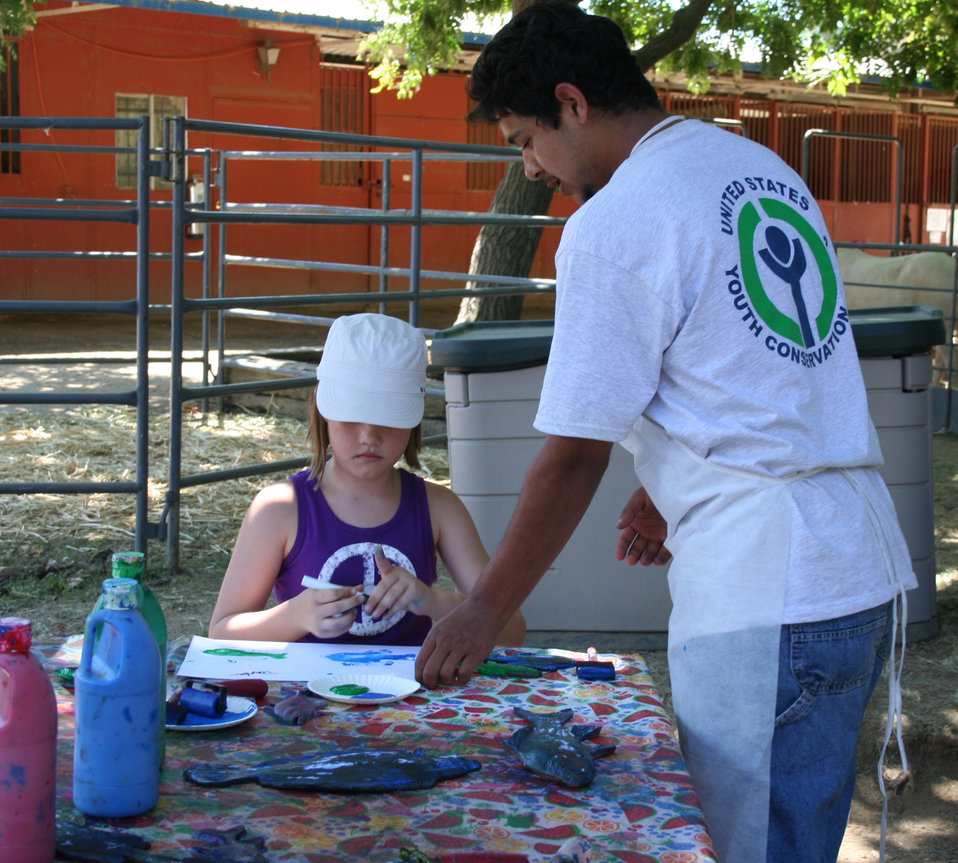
YCC crew member at the California State Fair booth

For the first time DOI agencies [US Fish and Wildlife Service, Bureau of Reclamation and Bureau of Land Management] joined together to host an America's Great Outdoors Booth at the California State Fair in Sacramento, Calif., July 14 - 31.

The booth included informational panels and displays as well as a children's activity area. Activities: wildlife masks, temporary tattoos, water-cycle bracelets, fish prints, touch boxes, scat bingo, a green-screen, coloring and bird bingo. Five days a week live raptors, snakes and bats were brought in.

About 50,000 children visitied the booth during the 18-day fair.